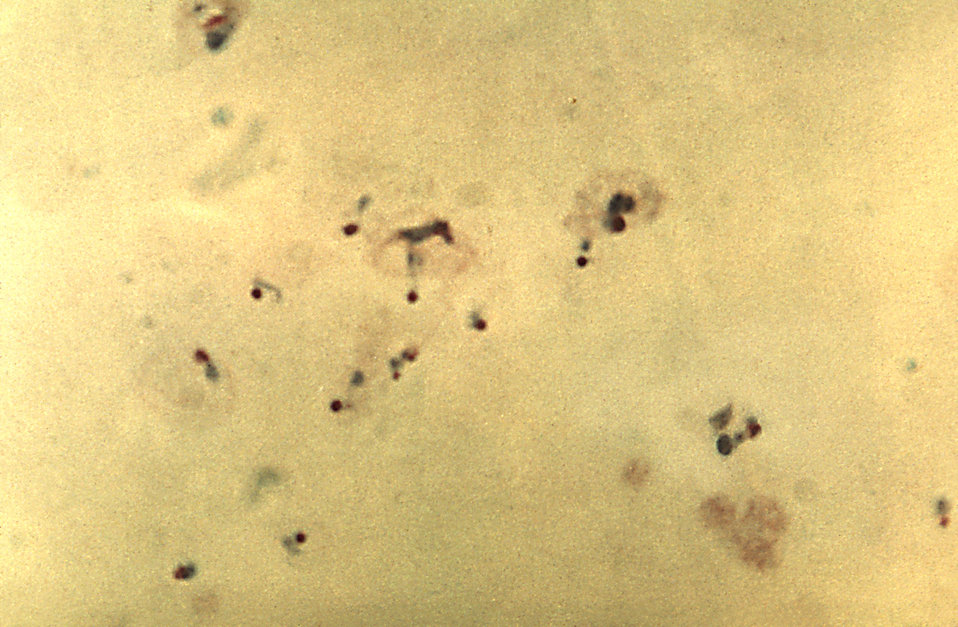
This thick film micrograph shows a young growing P. vivax trophozoite and some ring stage trophozoites, Magnified 1125x.